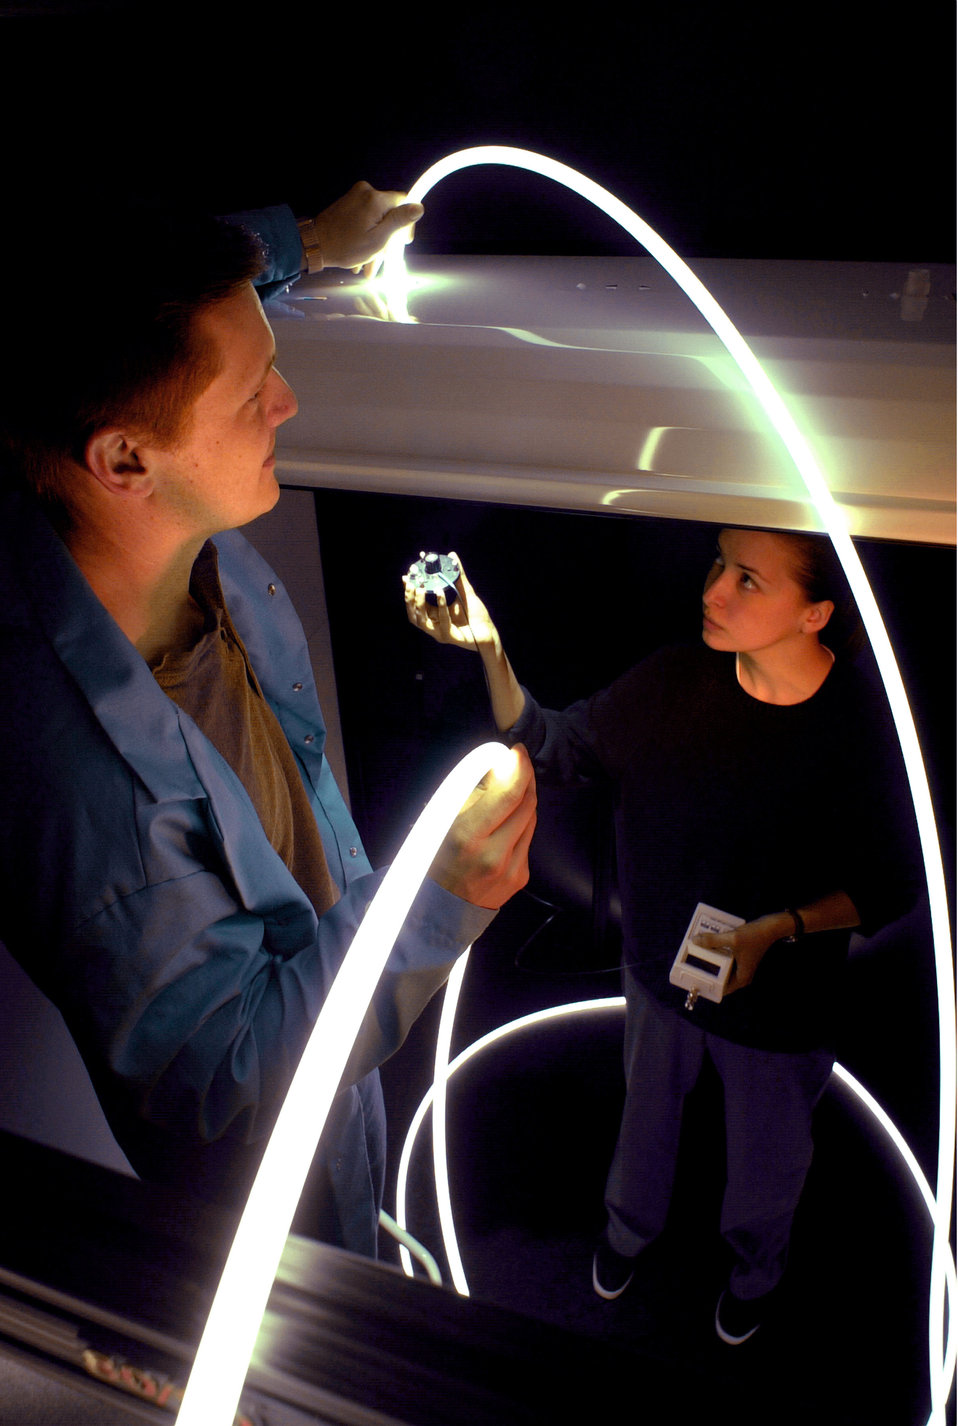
Hybrid lighting technology ORNL

01-126 DOE photo by Lynn Freeny
Hybrid lighting technology Oak Ridge National Lab. Oak Ridge Tennessee 2001